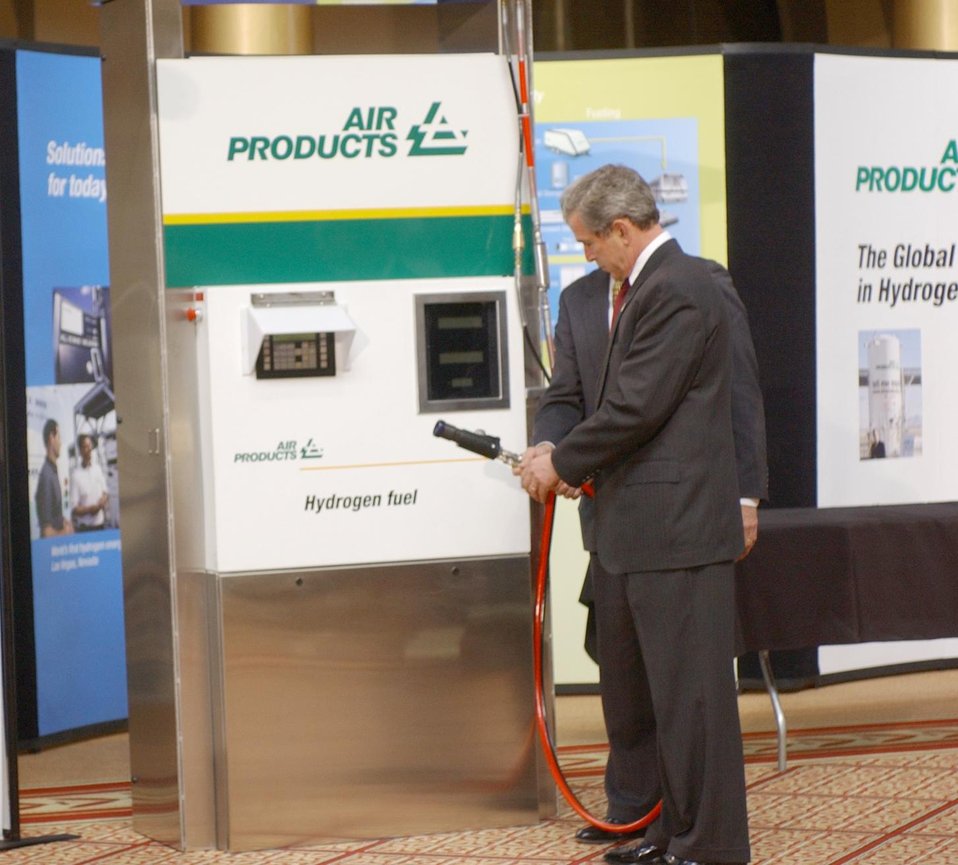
PRESIDENT BUSH EXAMINING THE AIR PRODUCTS INC. HYDROGEN FUELING DISPENSER.

AS PART OF THE FREEDOMCAR (COOPERATIVE AUTOMOTIVE RESEARCH) AND FUEL INITIATIVE, THE CLEAN AIR FOR THE 21ST CENTURY EXHIBIT AT THE NATIONAL BUILDING MUSEUM, 2-6-03, SHOWED EXAMPLES OF INDUSTRY PARTNERING WITH GOVERNMENT TO DEVELOP EFFICIENT HYDROGEN FUEL CELLS. THE EXHIBIT INCLUDED VEHICLES, CELL PHONES, LAP TOP COMPUTERS AND CAMERAS THAT CAN BE POWERED BY HYDROGEN FUEL CELLS.